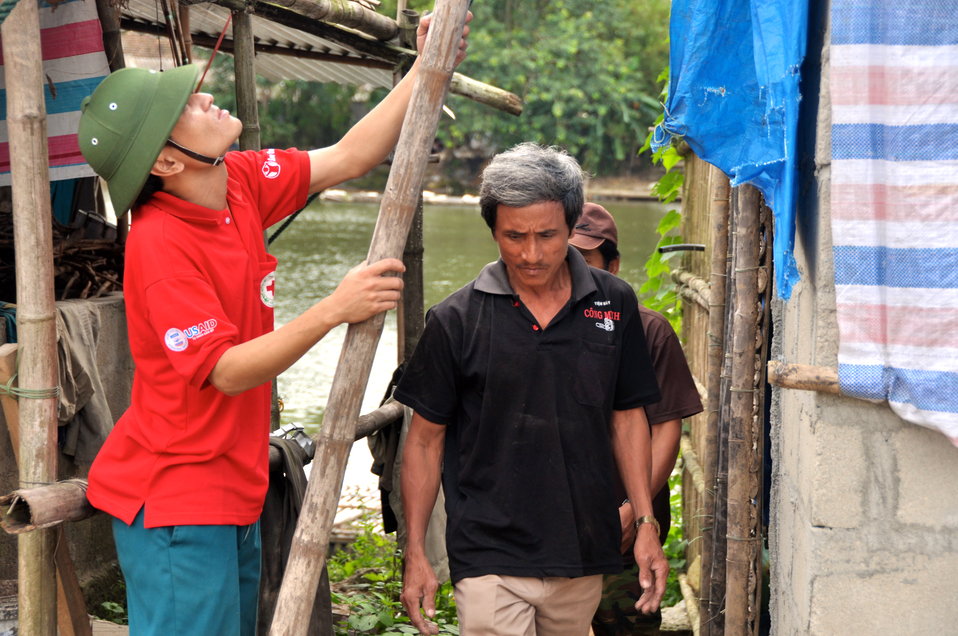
USAID and Save the Children support community evacuation drill and emergency preparedness in central Vietnam

Loc An Commune, Phu Loc District, Thua Thien Hue Province
December 4, 2012, Photo: Richard Nyberg, @USAIDVietnam